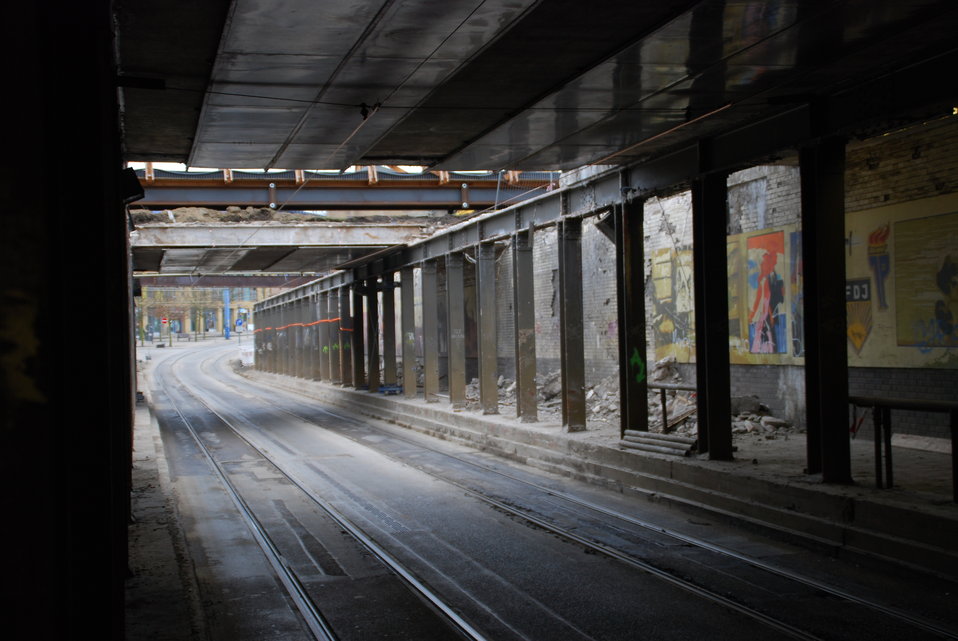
Abriss Bahnhofstunnel Frankfurt (Oder)